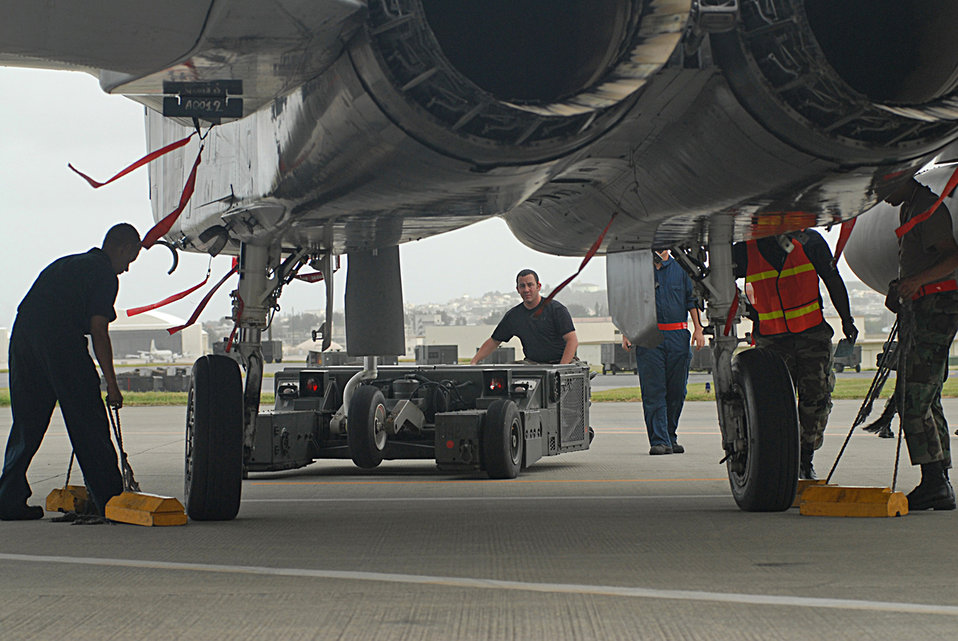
Kadena prepares for typhoon

Staff Sgt. Justin Farr (center) drives an aircraft handler to place an F-15 Eagle in a protective aircraft shelter in preparation for Typhoon Man-Yi July 12 at Kadena Air Base, Japan. Typhoon Man-Yi is expected to hit Okinawa July 13. It is the first typhoon of the year for the island. Sergeant Farr is with the 18th Aircraft Maintenance Squadron.